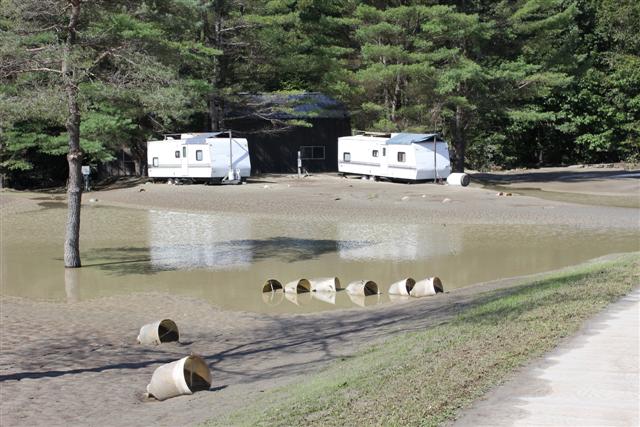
Damage at White River National Fish Hatchery

White River National Fish Hatchery in Bethel, VT. after Hurricane Irene came through on Sunday, August 28, 2011.